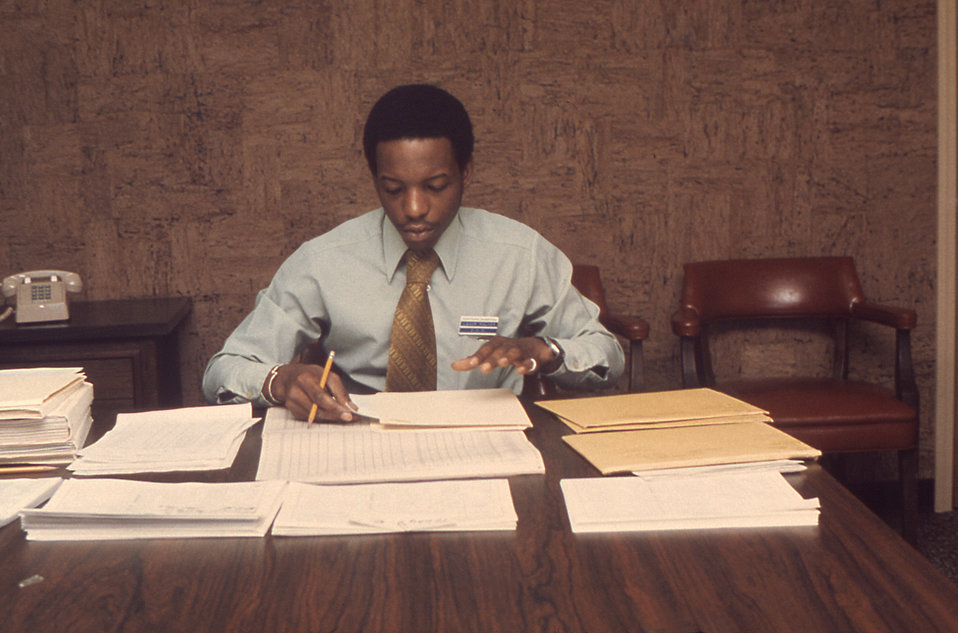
This historic image depicted a Centers for Disease Control (CDC) public health adviser working on a pilot study known as SENIC (Study on the Efficacy of Nosocomial Infection Control), which measured the accuracy of a system, designed by Robert W. Haley, M.D., that detected hospital-acquired infections through the analysis of medical records. SENIC was ultimately used to measure the change of infection rates in a random sample of U.S. hospitals. In this picture the advisor appeared to be doing an in-line quality control analysis, by comparing the agreement of duplicate reviews of the same medical records.